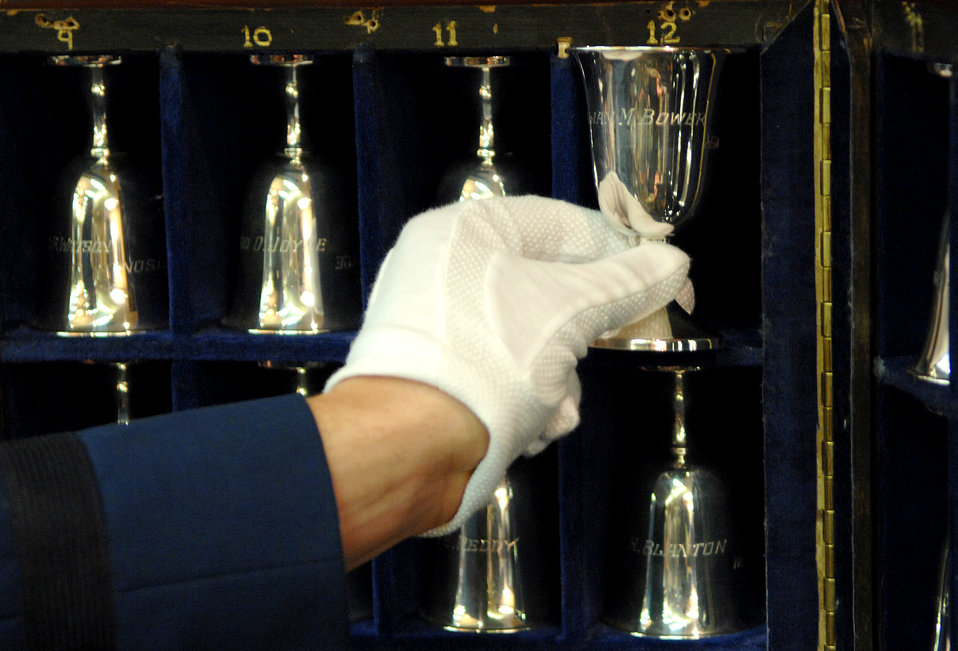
Raider goblet ceremony

Cadet 1st Class Scott Crellin removes a goblet from its case during a goblet ceremony April 18 in San Antonio. This reunion marks the 65th Anniversary of the Tokyo Raid in 1942. There are 80 goblets representing all 80 Doolittle Raiders. When a Raider dies, his goblet is turned over in the case.